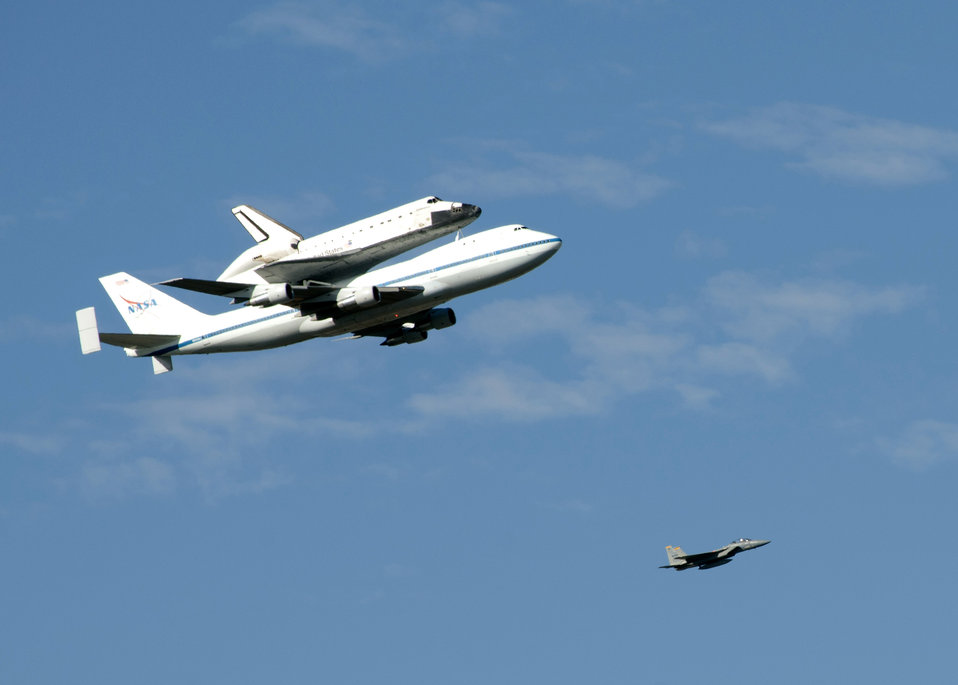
Space shuttle Endeavour flies over Sacramento District headquarters

The space shuttle Endeavour makes its final flight Sept. 21, 2012 and flies over the Capitol building near the U.S. Army Corps of Engineers Sacramento district headquarters in Sacramento, Calif. The Corps has a history of design and construction support for the National Aeronautics and Space Administration (NASA). Historical vignette: 1.usa.gov/OgWTBn